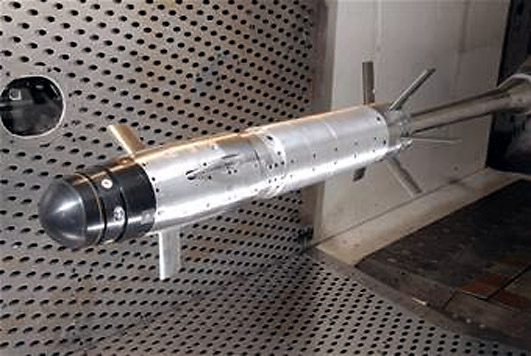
Arnold engineers test Army weapon to evaluate its capability

The Army's Mid-Range Munition model underwent aerodynamic testing in the transonic wind tunnel recently at Arnold Air Force Base, Tenn.